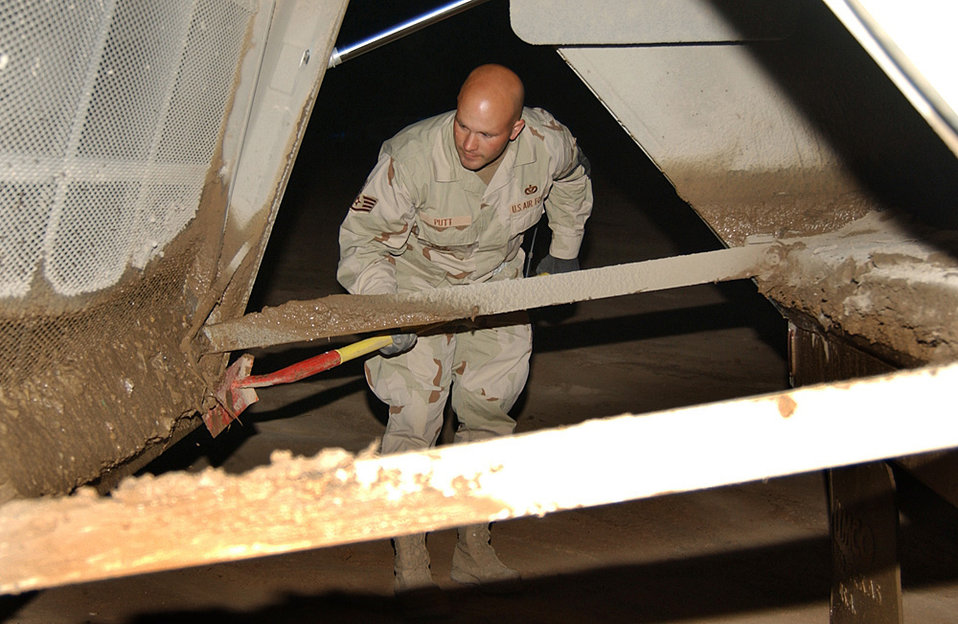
EOSS, ECES fight FOD on flightline

BALAD AIR BASE, Iraq (AFPN) -- Staff Sgt. Jason Putt cleans off a road sweeper before turning it over to the next shift. Sergeant Putt is with the 332nd Expeditionary Civil Engineering Squadron.